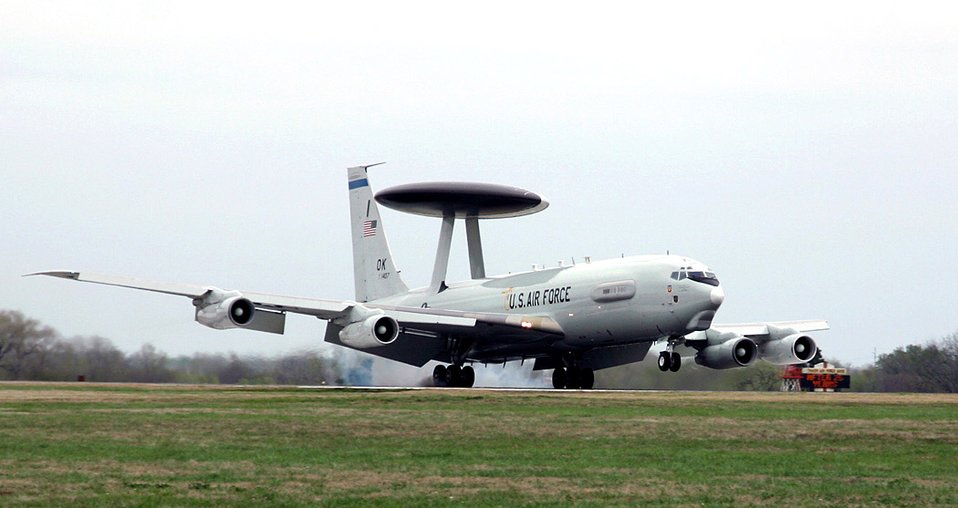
E-3 Sentry celebrates 30 years in Air Force's fleet

An E-3 Sentry airborne warning and control system aircraft, known as AWACS, lands at Tinker Air Force Base, Okla., March 23 after completing a mission. The first E-3 touched down at Tinker exactly 30 years to the day and began an new era for air surveillance.